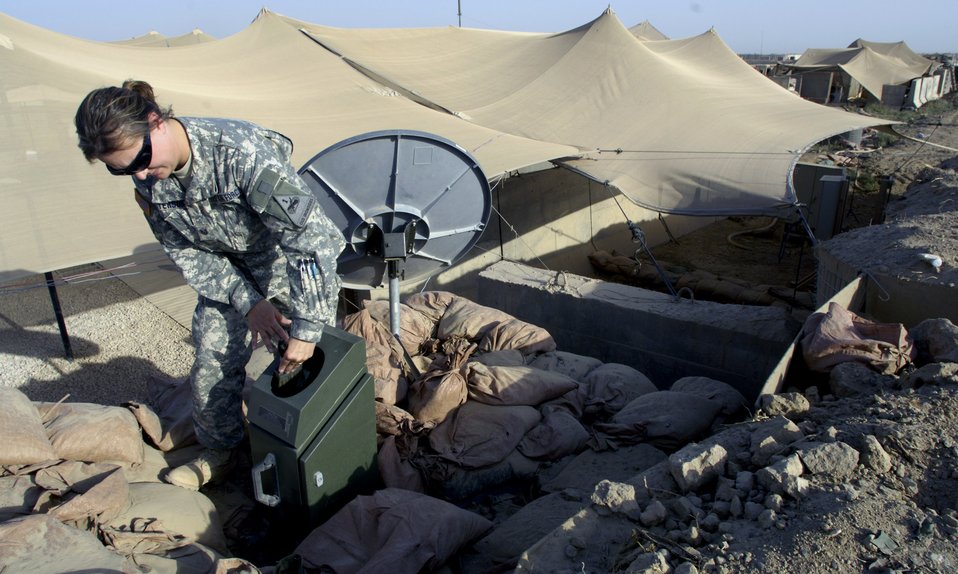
Weather team acclimates to mission in southern Baghdad

Tech. Sgt. Andrea Patterson performs her daily maintenance routine on a tactical meteorological operating system June 23 at Forward Operating Base Kalsu, Iraq. Sergeant Patterson and two other Air Force weather forecasters provide 24-hour-a-day weather updates to the Army 3rd Infantry Division's operations occurring in the Triangle of Death area. The instantaneous weather information the battlefield weathermen are able to provide are critical to the success, and to the safety of the 3rd ID's ground and aviation operations. Though Sergeant Patterson is attached to the 3rd ID, she officially falls under the recently formed 3rd Expeditionary Weather Squadron headquartered on Camp Victory in Iraq. She is deployed from Detachment 6 of the 7th Weather Squadron from Wiesbaden, Germany.